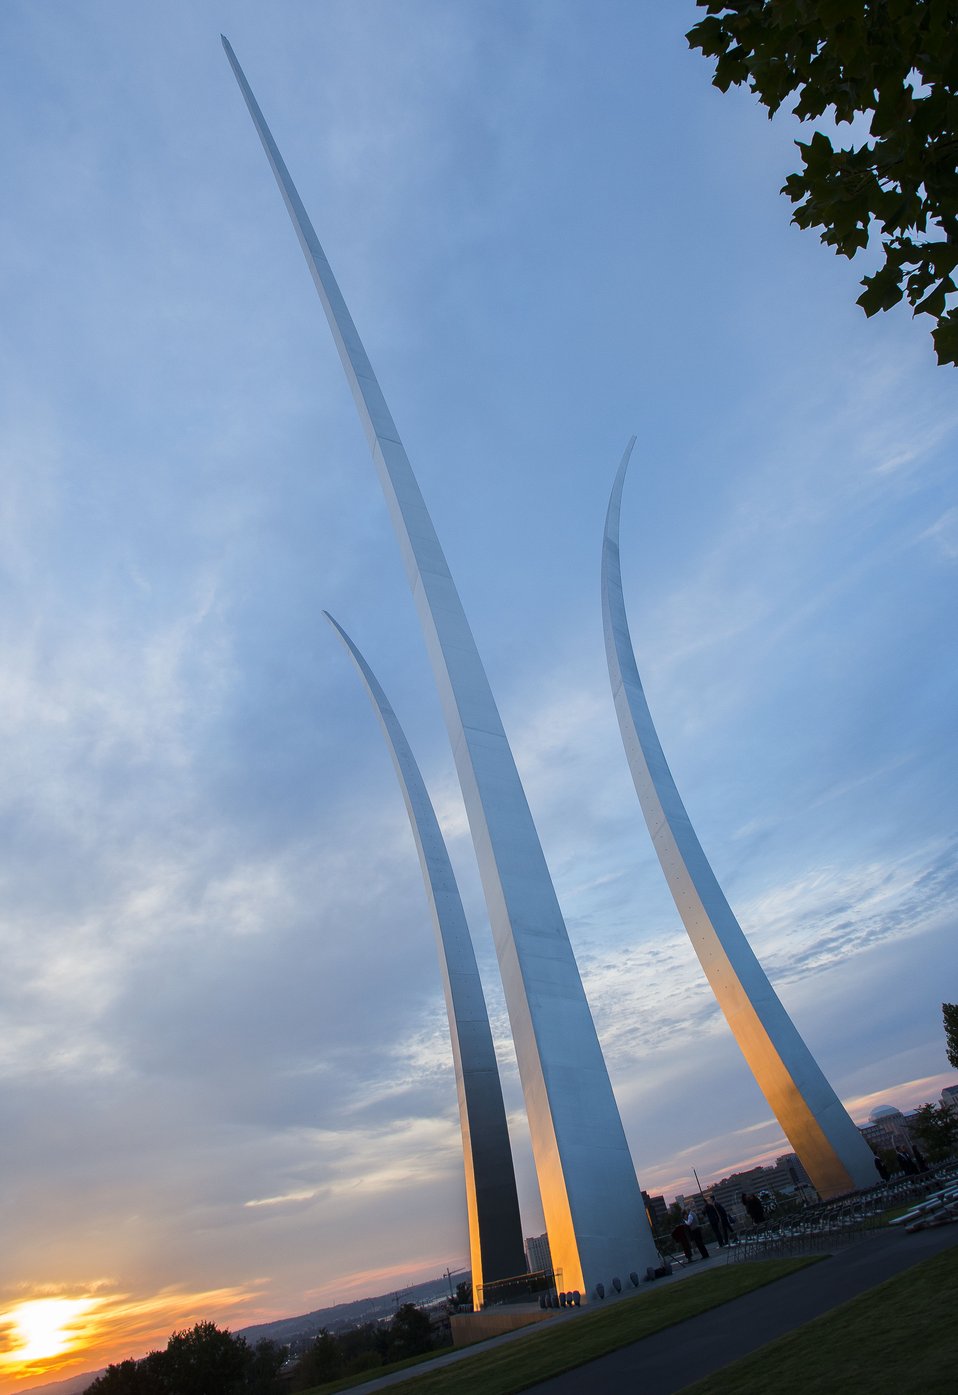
Air Force leaders attend AFA remembrance ceremony

Early morning light at the Air Force Memorial in Arlington, Va., Sept. 16, 2012, set the scene for a the Air Force Association's annual wreath laying ceremony commemorating AFA members who died in the last year.